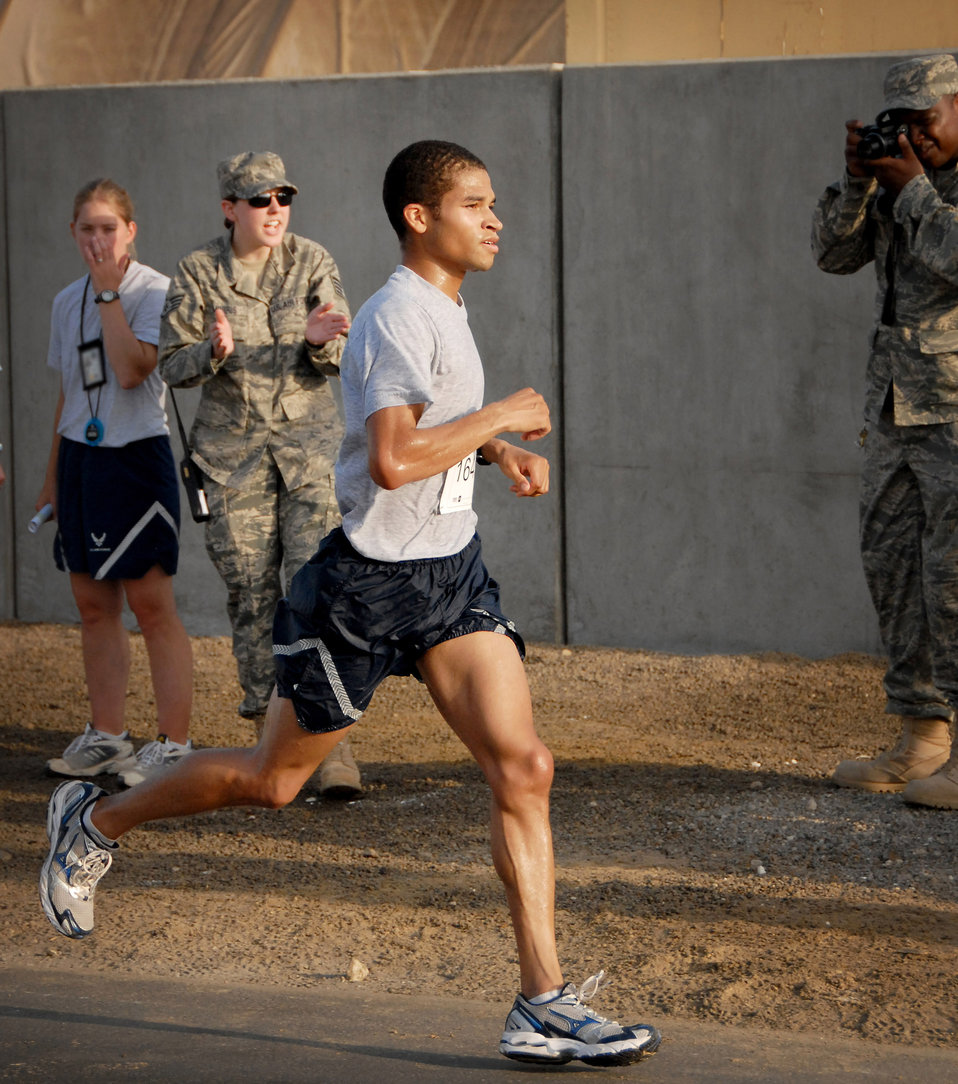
Catch me if you can

Mike Bowman gets cheered on from the sidelines as he finishes first place in the 13.1-mile